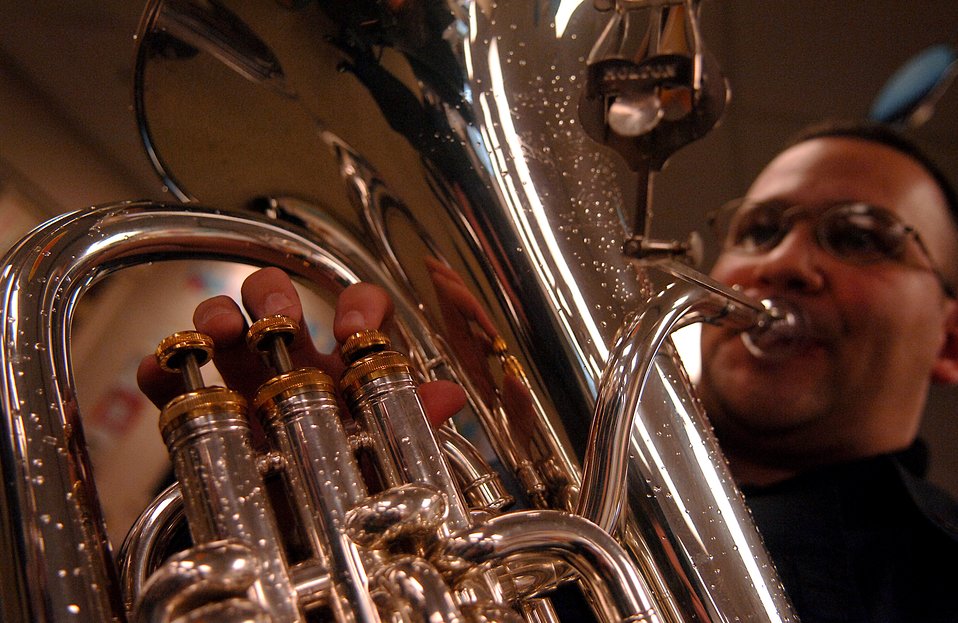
Air Force band plays final tribute for President Ford

An Air Force musician warms up to rehearse for the funeral service for President Gerald R. Ford after arriving at Grace Episcopal Church Jan. 1 in Grand Rapids, Mich.